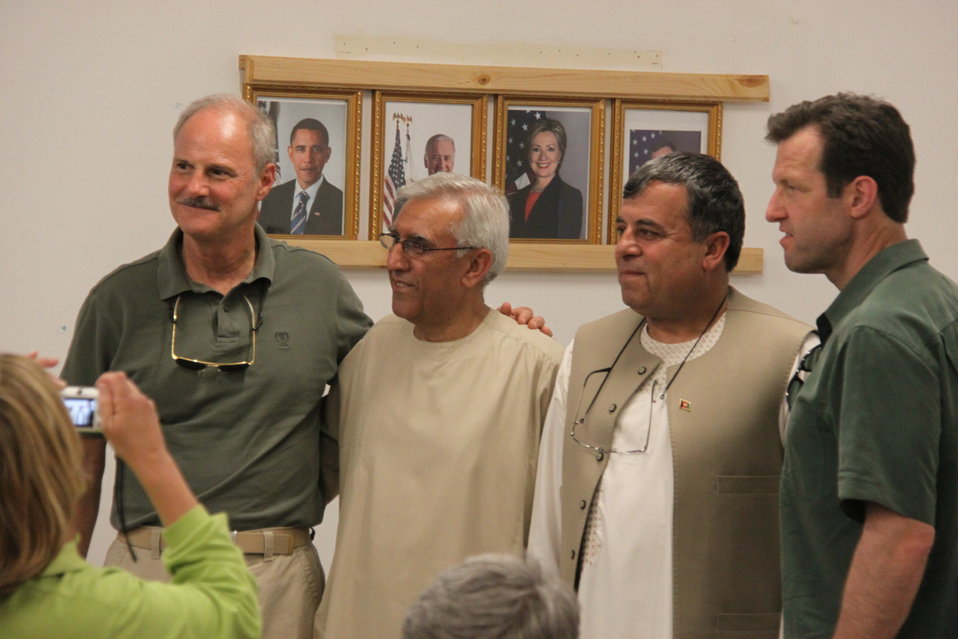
Meeting with Local Leaders in Kandahar